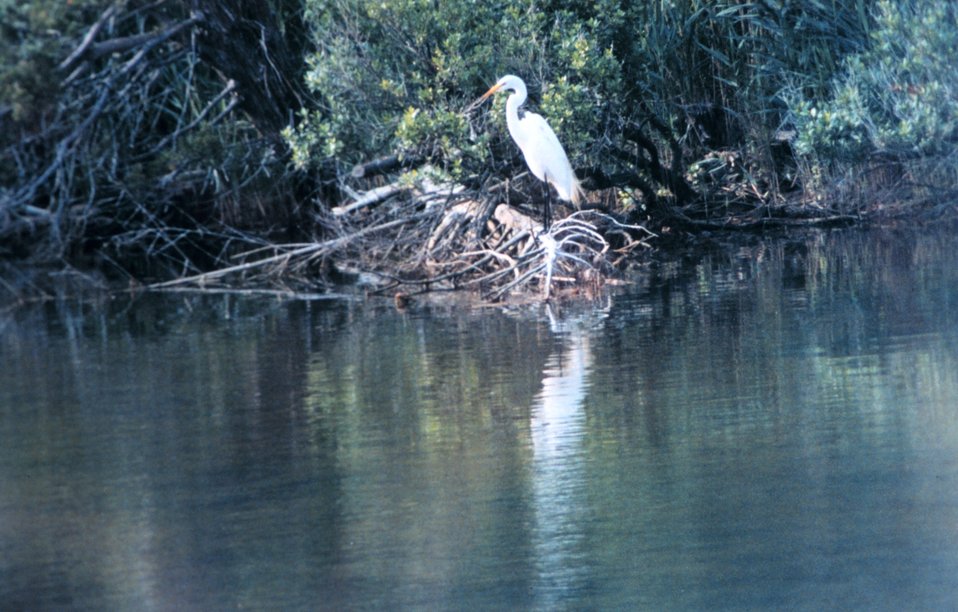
A Great Egret.